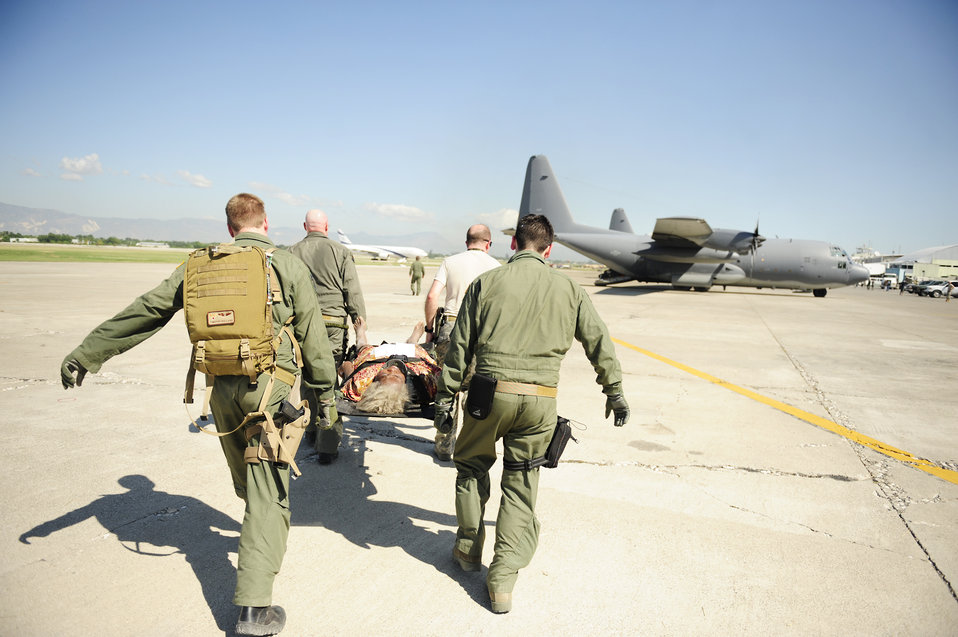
Haiti earthquake relief

Airmen carry a wounded Haitian to a C-130 Hercules Jan. 15, 2010 at the Port-Au-Prince airport, Haiti. Department of Defense assets have been dispatched to Haiti to assist with humanitarian assistance and disaster relief after a magnitude 7 earthquake hit the country Jan. 12, 2010.